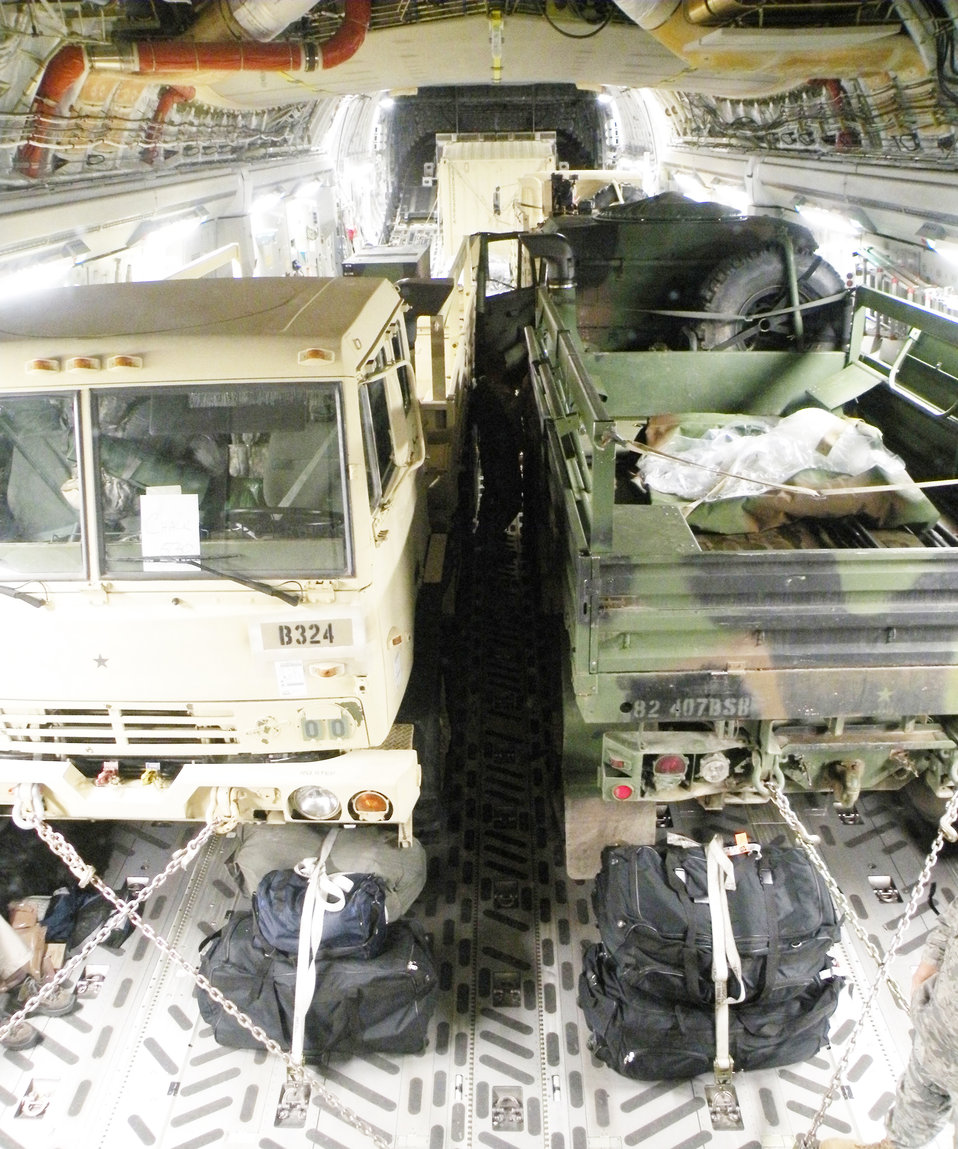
Total-force crews support Operation Unified Response in Haiti

A 317th Airlift Squadron Reserve flight crew from Charleston Air Force Base, S.C., fly more than 80,000 pounds of cargo to Haiti on a C-17 Globemaster III in support of Operation Unified Response during the early morning hours of Jan. 22, 2010.